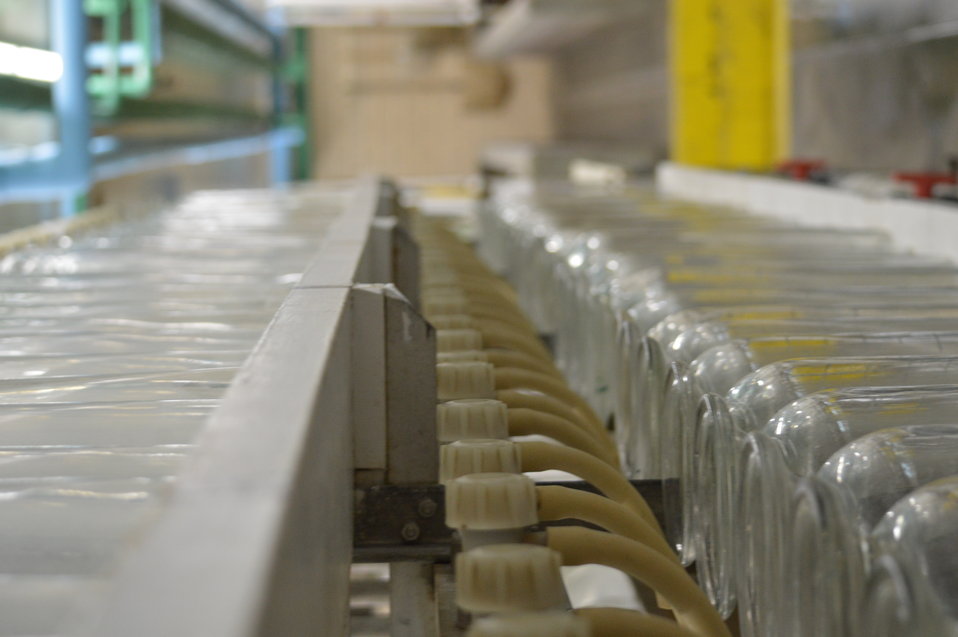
Upwelling jars

Garrison Dam National Fish Hatchery in North Dakota.